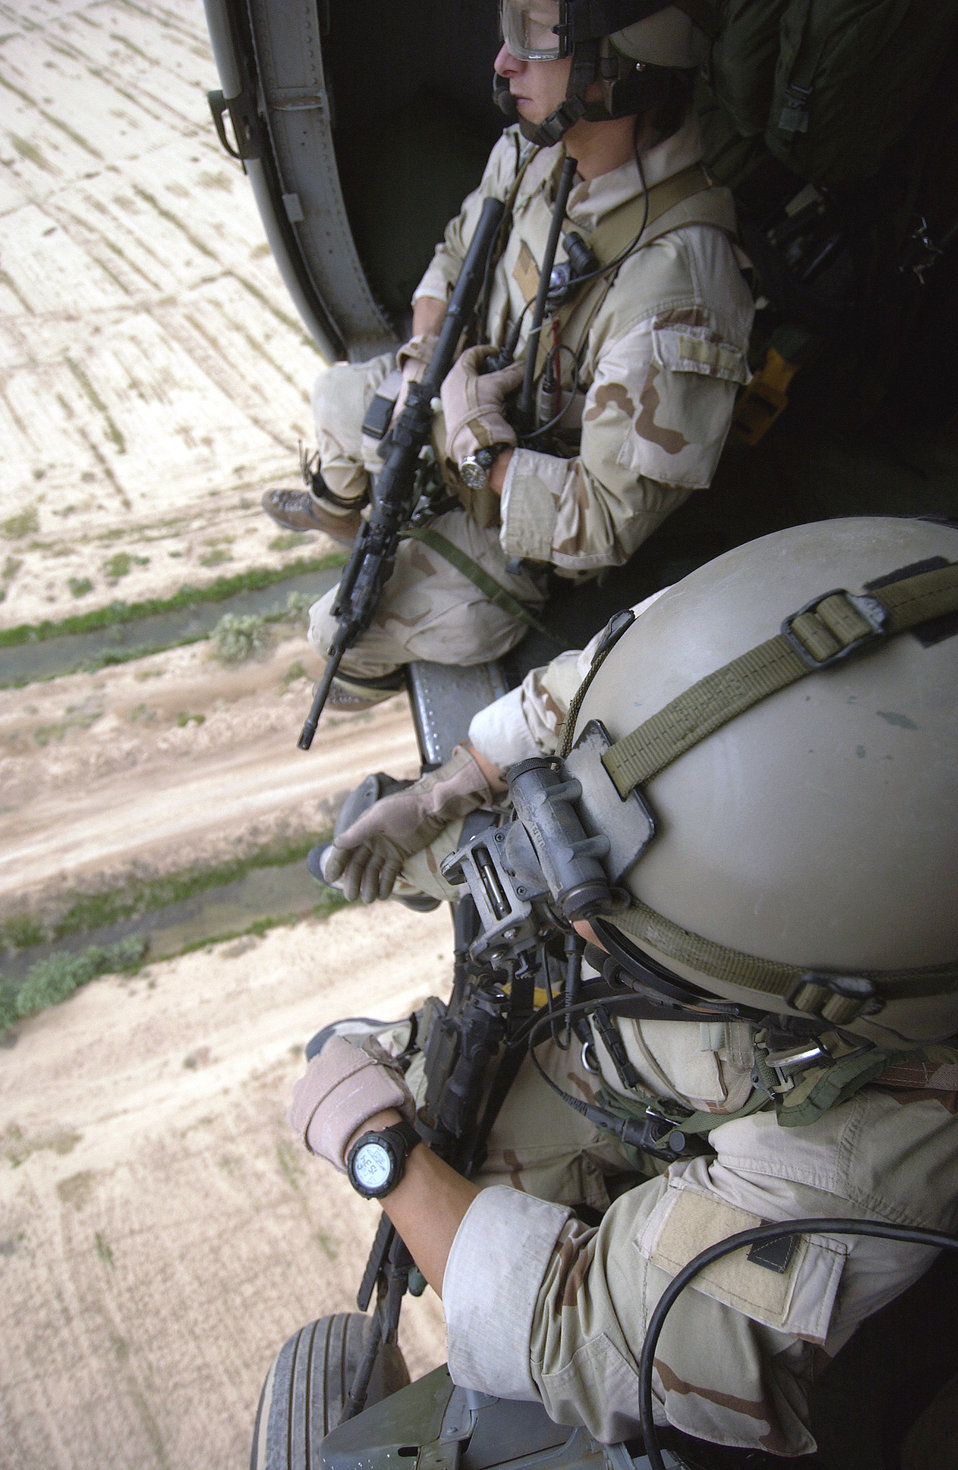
Scan the AOR

OVER BALAD AIR BASE, Iraq -- Two U.S. Air Force Pararescueman scan for threats during a flight aboard an HH-60G Pavehawk here March 30. The pararescumen are assigned tothe 64th Expeditionary Rescue Squadron.